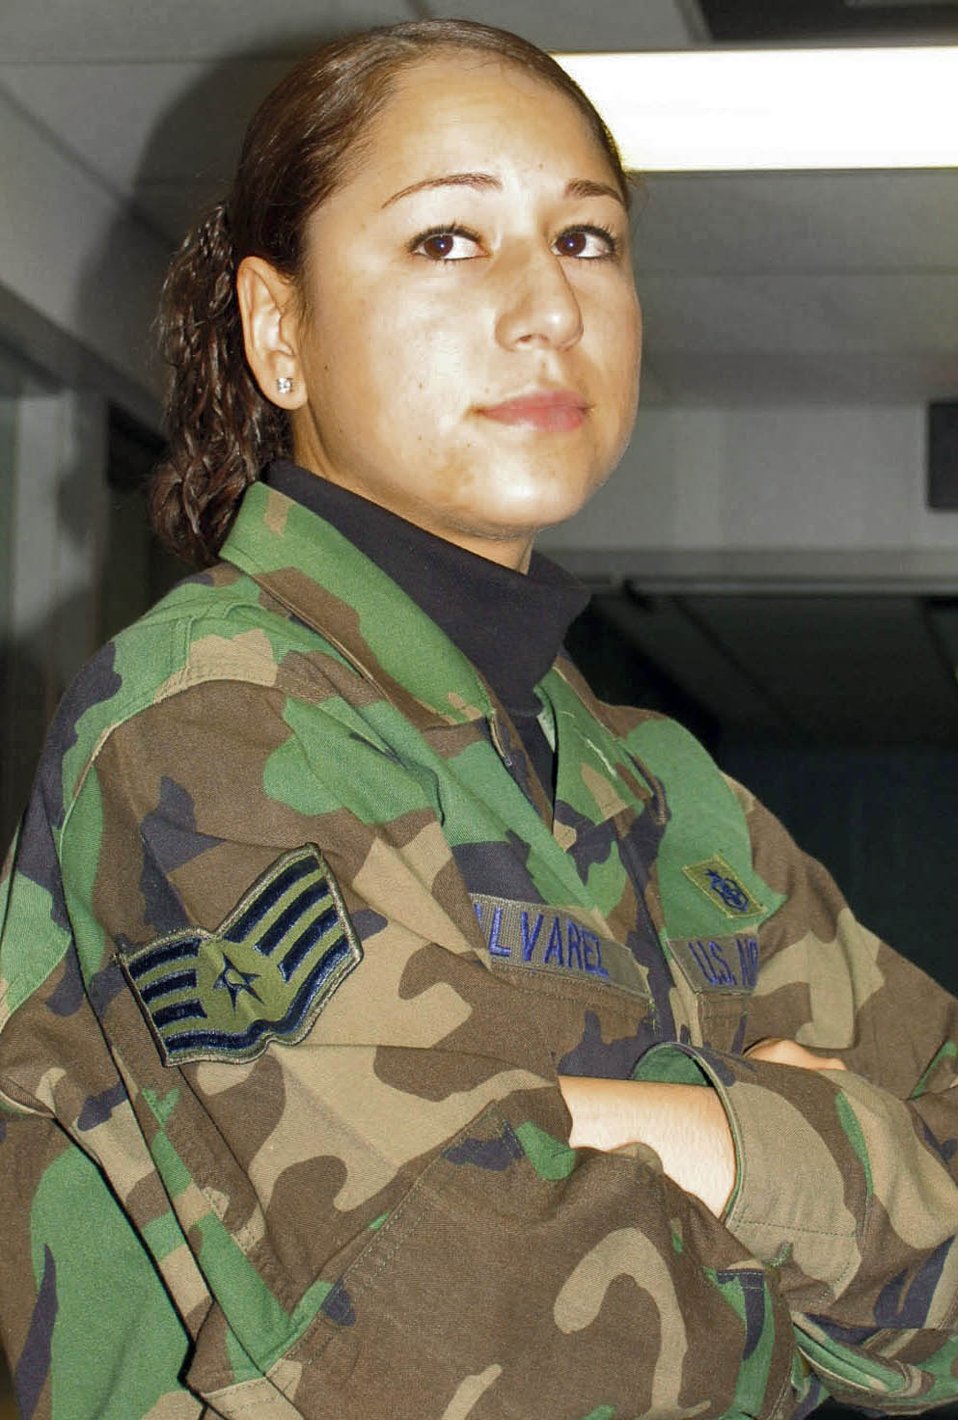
Family ties

WHITEMAN AIR FORCE BASE, Mo. (AFPN) -- Staff Sgt. Yaneth Alvarez moved to the United States in 1993 at age 13. She sends $300 a month to help support her family in Columbia.